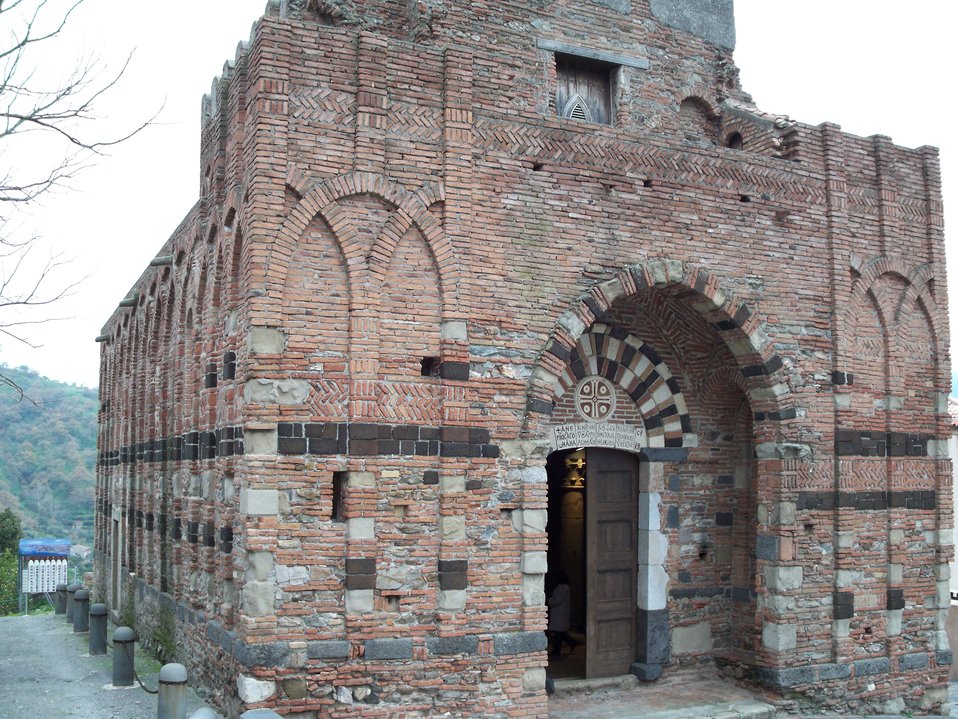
Italiano: Prospetto della chiesa normanna dei SS Pietro e Paolo di Casalvecchio Siculo (XII sec.)